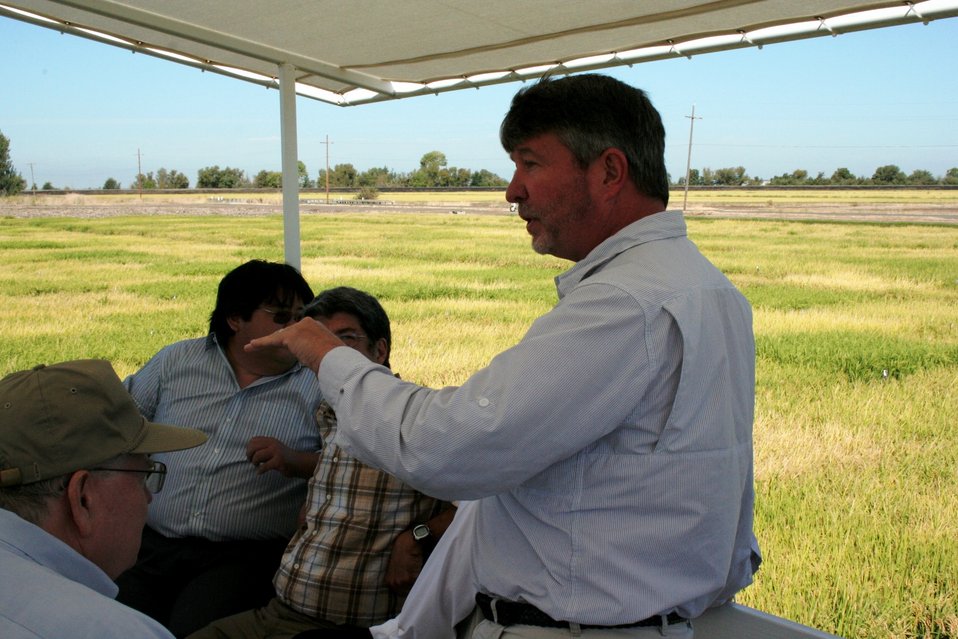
FDA's Rice Tour: Looking for Insights on Arsenic (0755)

FDA Commissioner Margaret A. Hamburg and colleagues visited research facilities and rice farms in California on Sept. 4-5, 2013 in an effort to gain a greater understanding of the presence of arsenic in rice. Tim Johnson, president and CEO of the California Rice Commission, joined the tour of the Rice Experiment Station in Biggs, Calif. For more information, read the FDA Voice blog:

• On Farms and in Labs, FDA and Partners Are Working to Get Answers on Arsenic in Rice